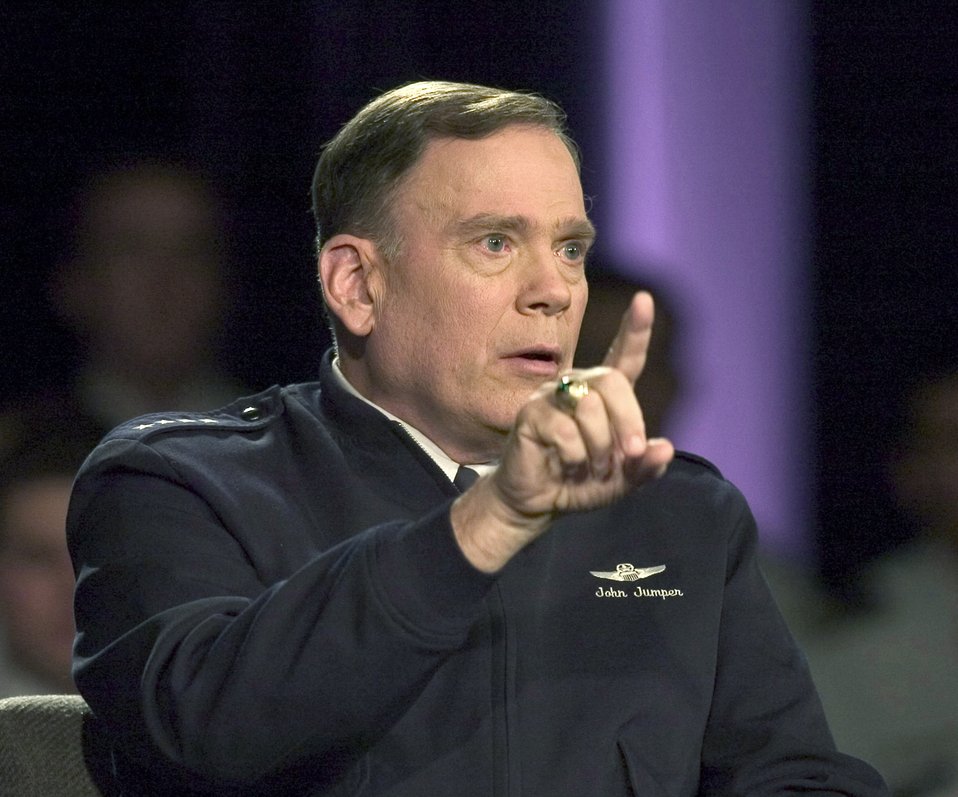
Academy town hall meeting reaches worldwide audience

U.S. AIR FORCE ACADEMY, Colo. -- Air Force Chief of Staff Gen. P. John Jumper speaks to the audience during the town hall meeting here Sept. 27. Joining the general were Secretary of the Air Force Dr. James G. Roche and Chief Master Sgt. of the Air Force Gerald R. Murray. The event was broadcast on The Pentagon Channel and American Forces Radio and Television Service stations worldwide.